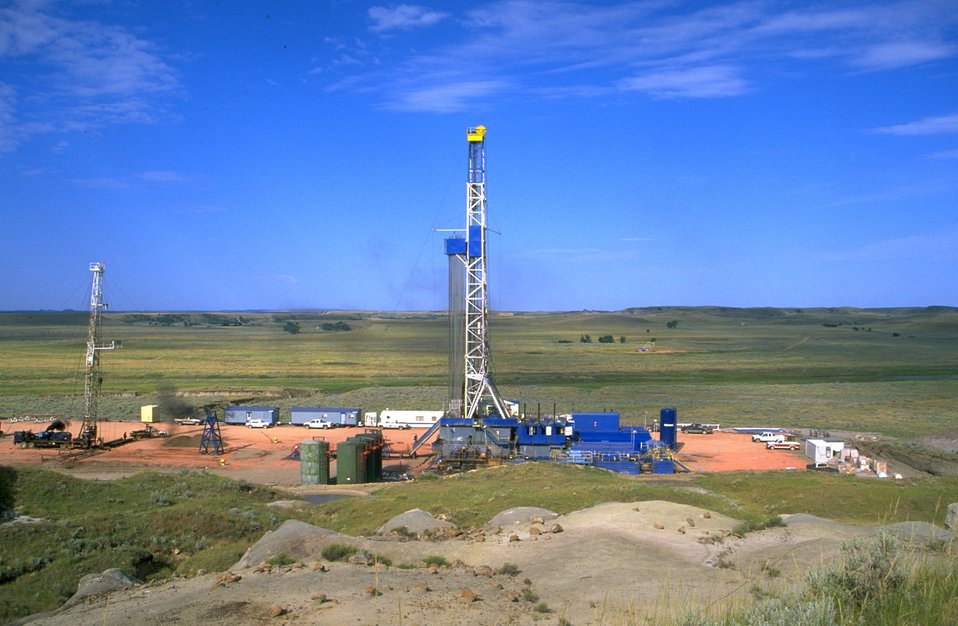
Drilling rig and workover rig on the same pad